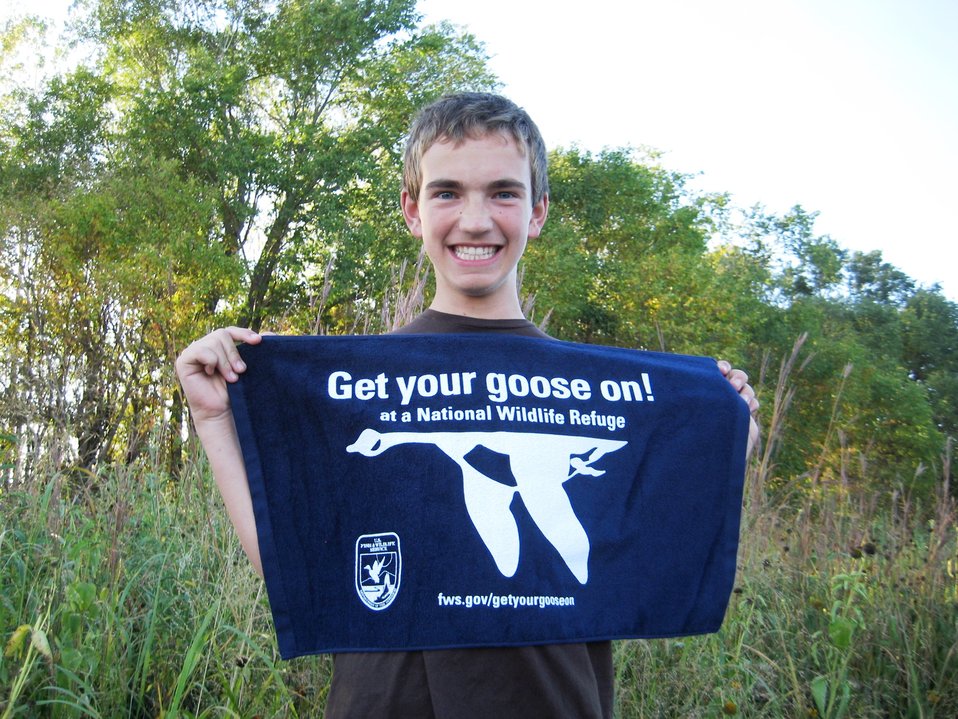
Get Your Goose On!

Taken at Tewaukon National Wildlife Refuge.